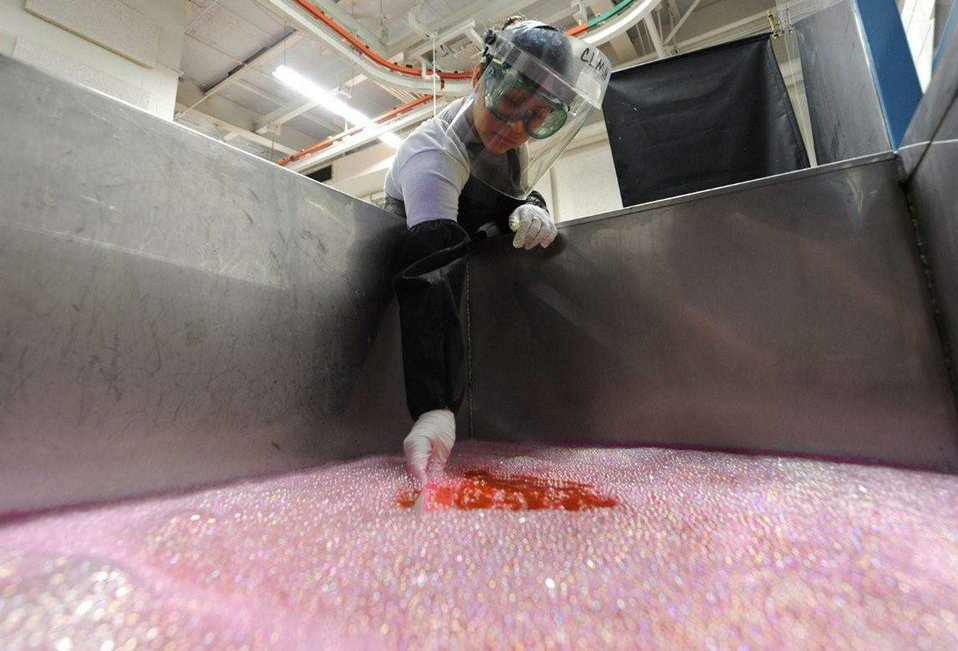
Photo essay: Taking a closer look

Senior Airman Lilia Linares dips a piece of metal into a tank of emulsifier to remove excess liquid dye penetrate May 27 at Charleston Air Force Base, S.C. The nondestructive inspection section inspects more than 40,000 pieces of weapon systems and non-weapon systems assets a year. Airman Linares is a nondestructive journeyman with the 437th Maintenance Squadron.